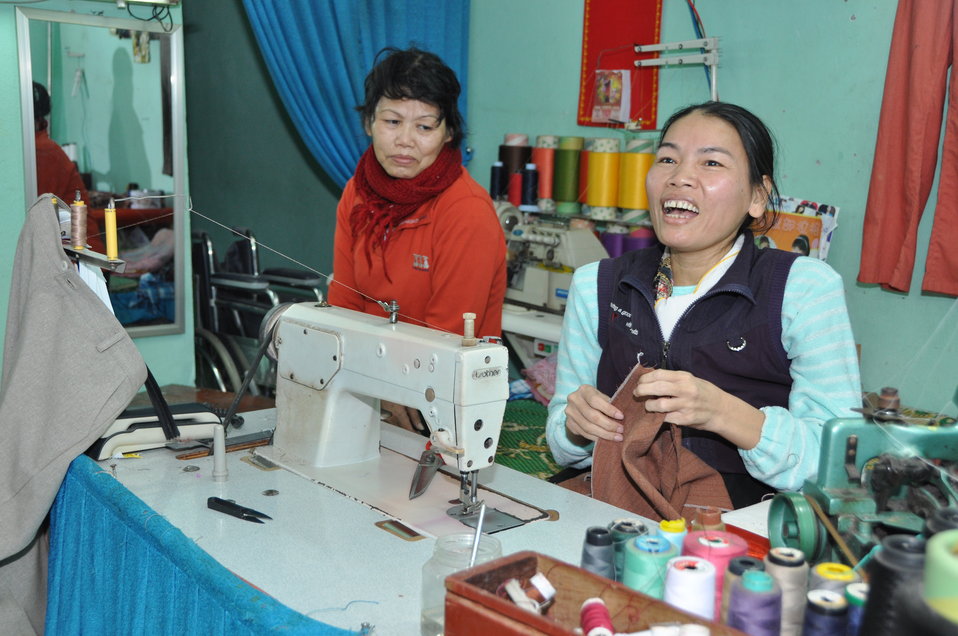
Le Thi Het receives support to boost her income from sewing.

Ms. Le Thi Het received a USAID funded wheelchair and regular physical therapy services as part of a three-year project in Danang.